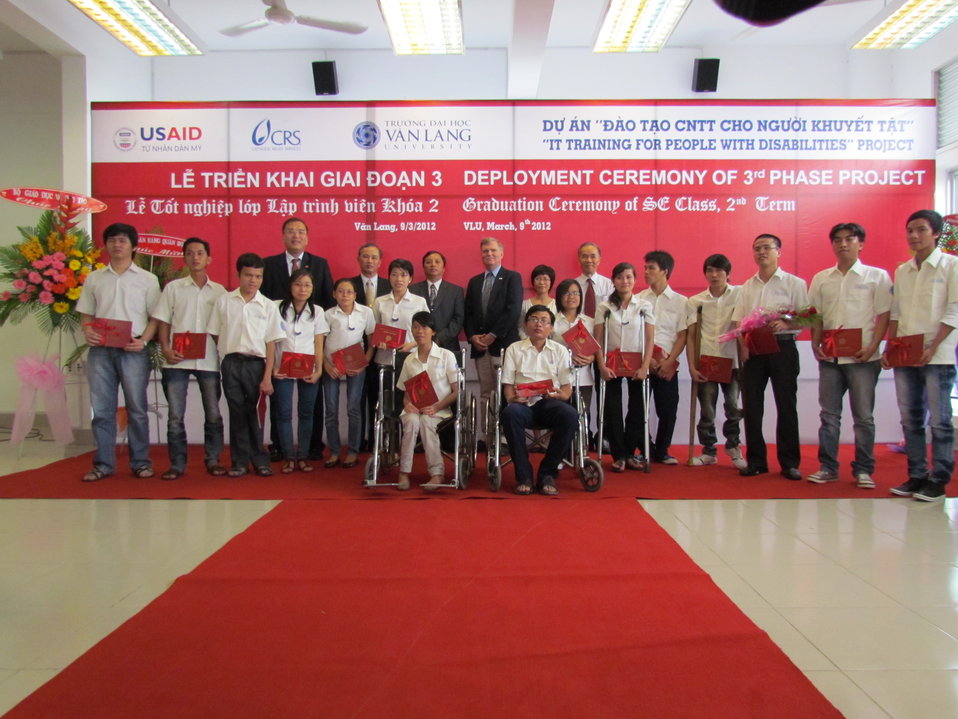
Graduates receive certificates in IT at USAID-funded training program at Van Lang University, HCMC